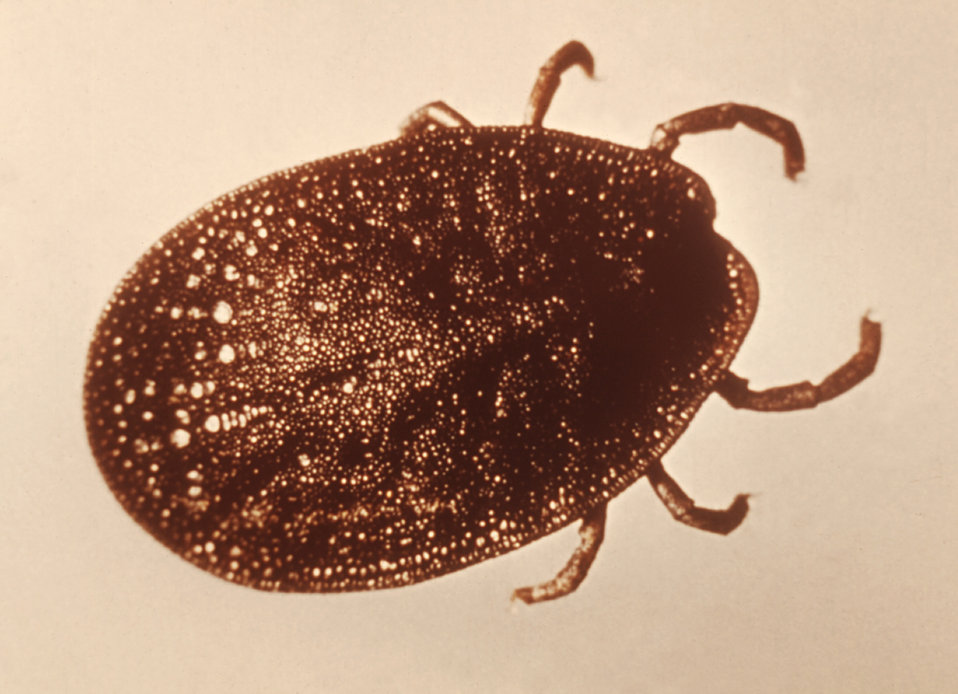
This is a member of the Argasidae family of North American 'soft ticks', and is a member of the genus Argus.